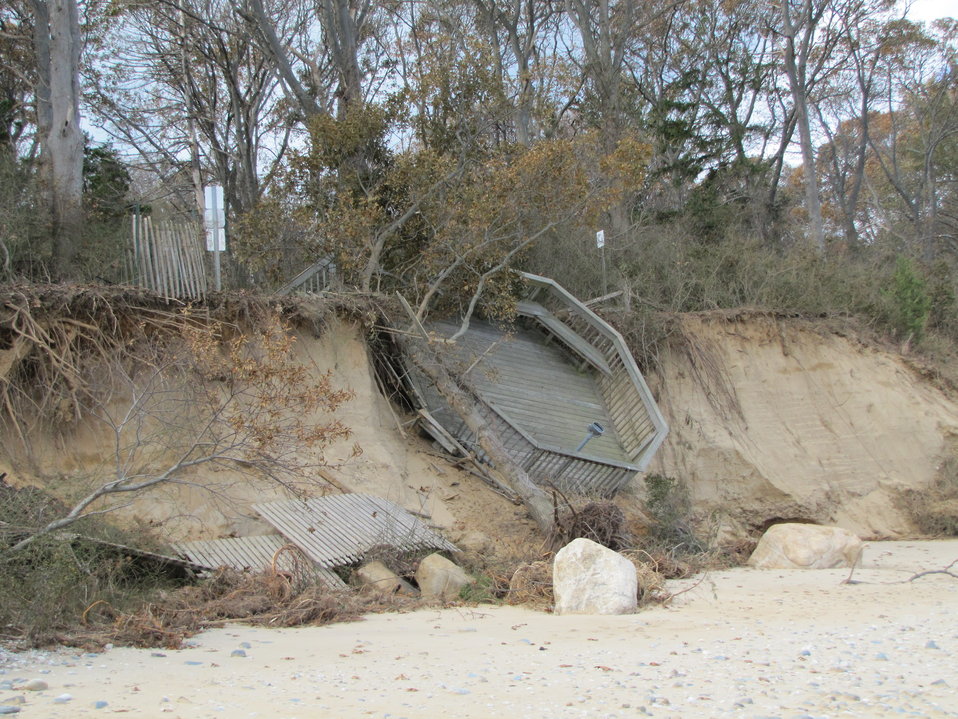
Washed out overlook at Target Rock National Wildlife Refuge (NY)

Overlook and fence washed out by storm surges at Target Rock National Wildlife Refuge, part of the Long Island National Wildlife Refuge Complex.